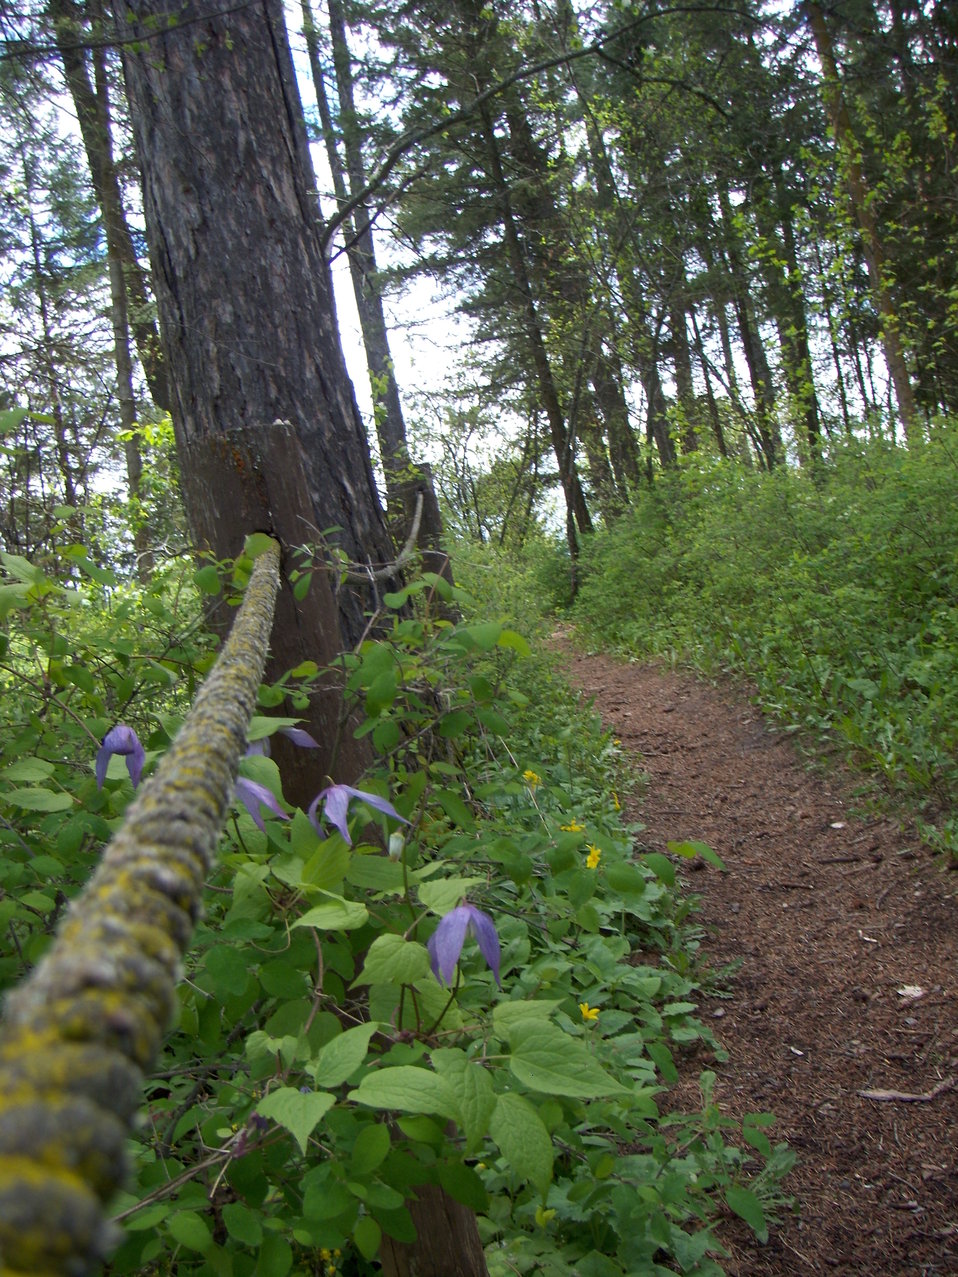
Nature Trail at the Creston National Fish Hatchery

Springtime at the Creston National Fish Hatchery is a wonderful time to enjoy wildflowers while walking the nature trail.

Location: Creston National Fish Hatchery

Credit: Evie Bradley / USFWS

Photo Contest Entry #89